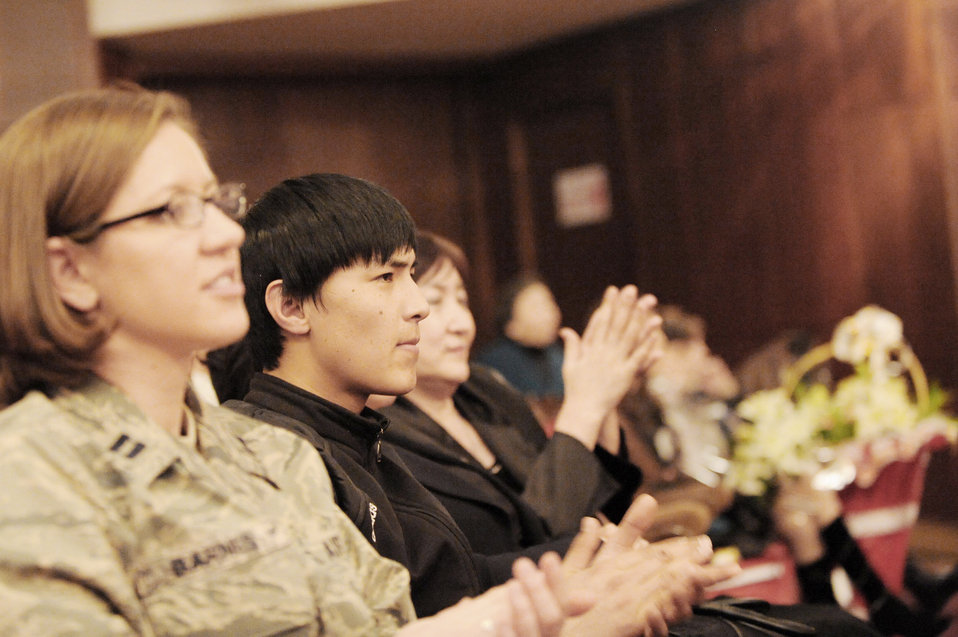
Airmen participate in Kyrgyz Philharmonic

Audience members listen to a concert at the Kyrgyz National Philharmonic Feb. 25, 2010, in Bishkek, Kyrgyzstan. In honor of International Women's Day, the Congress of Women of the Kyrgyz Republic hosted 25 Airmen from the Transit at Manas in Kyrgyzstan who took part in the three-hour performance.